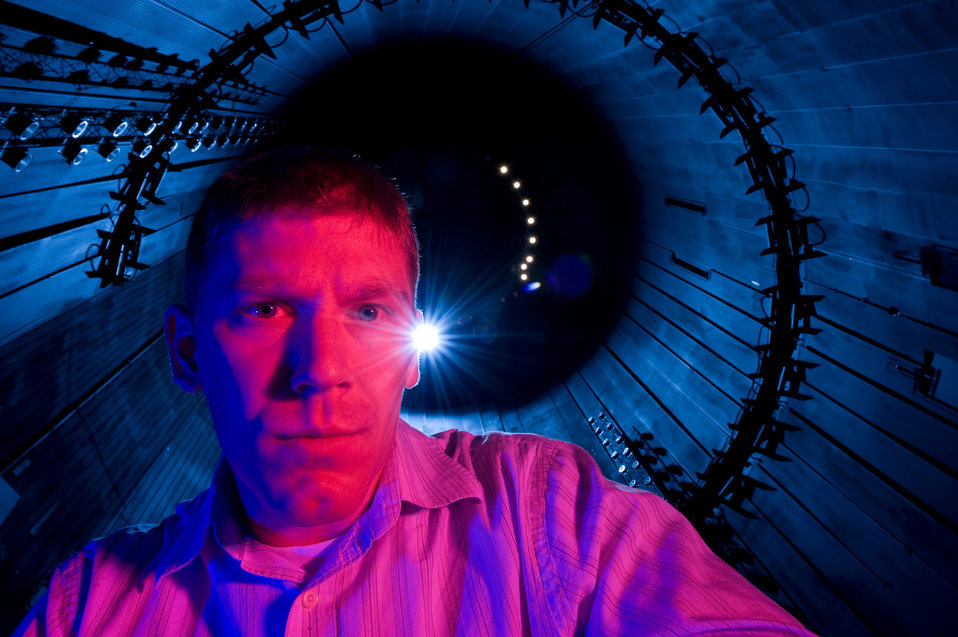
In the Space Chamber

Mike Lazalier, lead engineer, Aerospace Testing Alliance, on the test platform near the bottom of the Mark 1